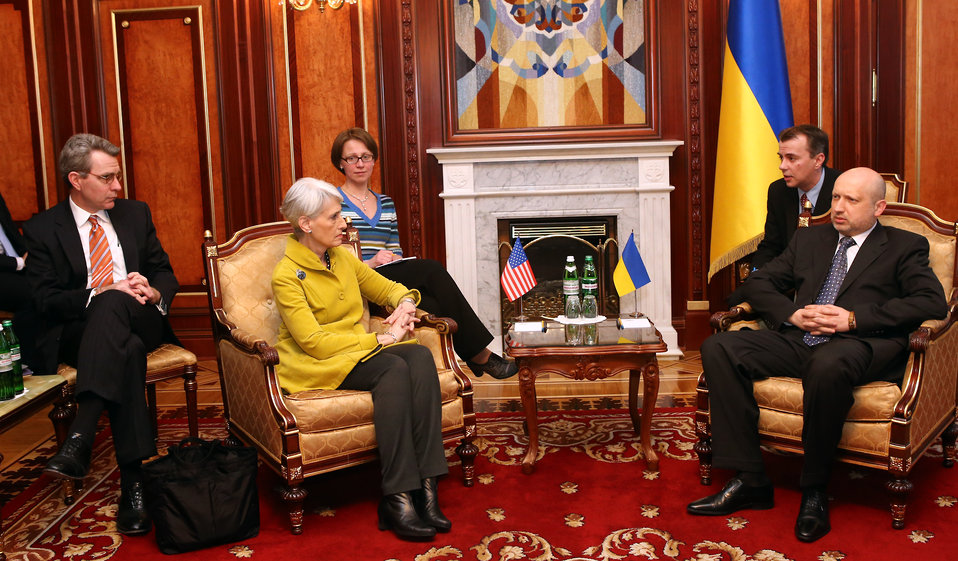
Under Secretary Sherman Meets With Acting Ukrainian President Turchynov

Under Secretary of State for Political Affairs Wendy Sherman meets with Acting Ukrainian President Oleksandr Turchynov at the Verkhovna Rada in Kyiv, Ukraine, on March 20, 2014.